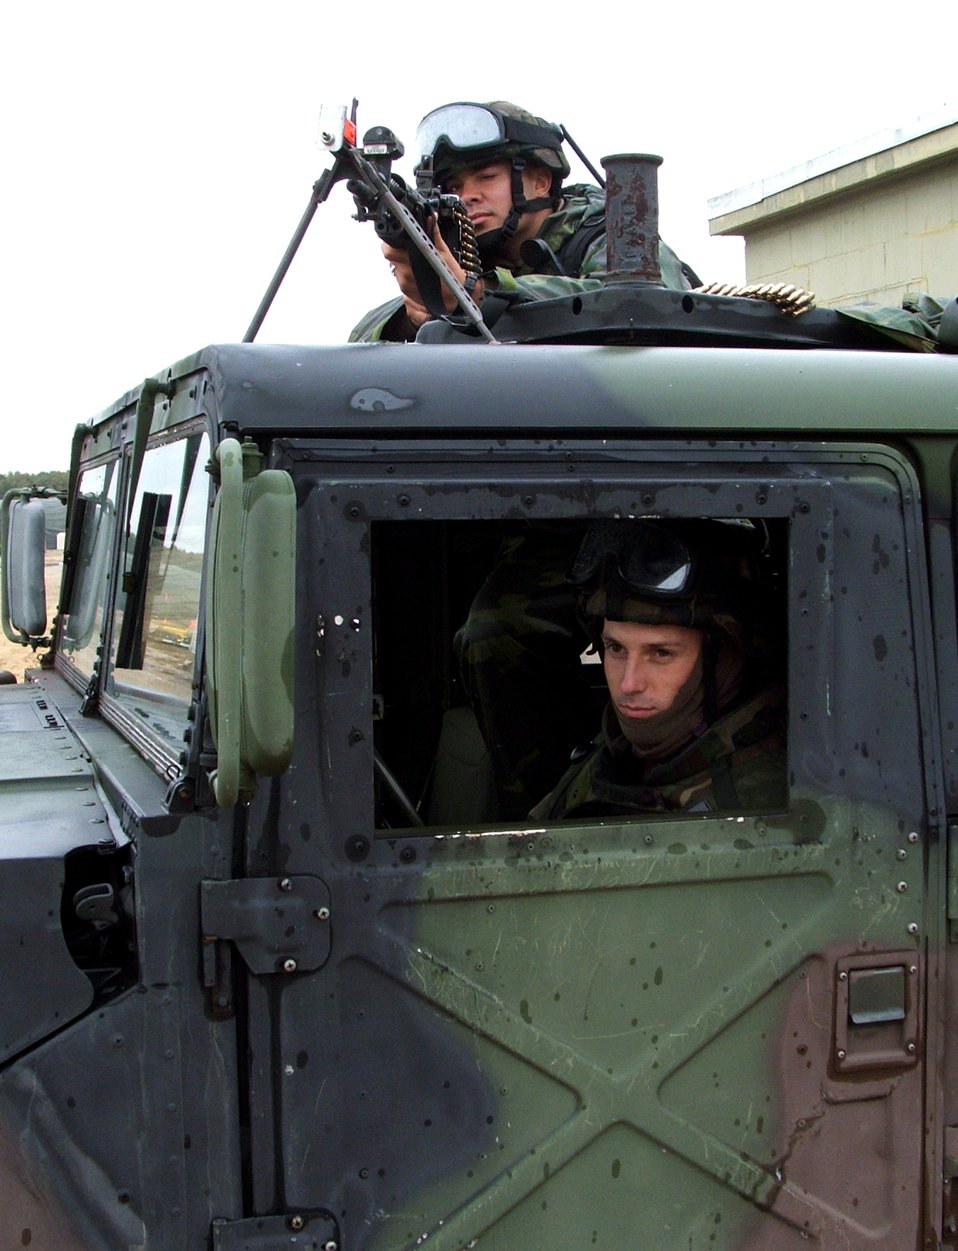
Eagle Flag

NAVAL AIR ENGINEERING STATION LAKEHURST, N.J. (AFPN) -- Senior Airmen Jeff Bury (top) and William Glidewell guard an entry control point to an Air Force camp here. The Airmen and others are taking part in exercise Eagle Flag 06-1, which began Oct. 21. The troops, from the 613th Security Forces Squadron at Anderson Air Base, Guam, deployed to support the 613th Contingency Response Group. (U.S. Air Force Photo by Tech. Sgt. Scott T. Sturkol)Response Group which was the first unit to deploy into Eagle Flag.